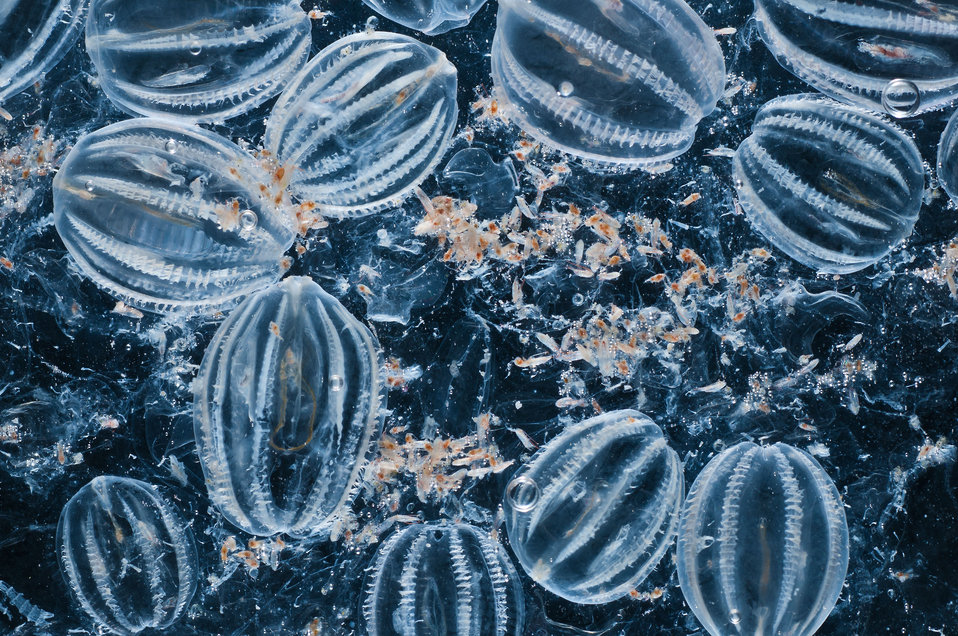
August 9, 2011 Comb jellies (ctenophores) are predators of larval fish

The smaller orange dots are zooplankton, they could be copepods, amphipods, or krill. All are crustaceans that would stay this small their entire life.

The stripes on the jellies are ciliary combs, which they use to swim through the water.